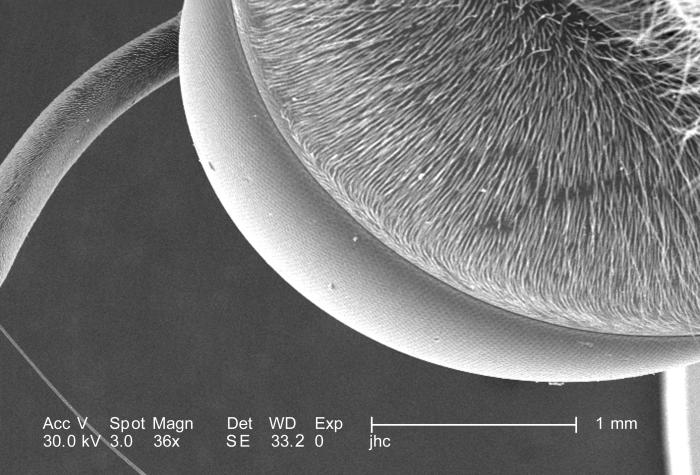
Seen emerging from behind its left compound eye, under a low magnification of 36X, this scanning electron micrograph (SEM) depicted the mid-region of this unidentified hornet's left antenna. Found in the suburbs of Decatur, Georgia, this antenna was one of a pair, which along with other sensorial structures such as the hair-like 'setae', seen here coating the antenna's surface, and the surface of insect's head, provided the hornet with data indicative of changes encountered in its environment such as chemical, thermal, and tactile queues.The antenna is composed of three main regions: scape, pedicle, and flagellum. The scape, which is not visible in this view, attaches the sensory organ to the head region, and the pedicle, also not visible, joins the distal, jointed, multisegmented flagellum to the scape.